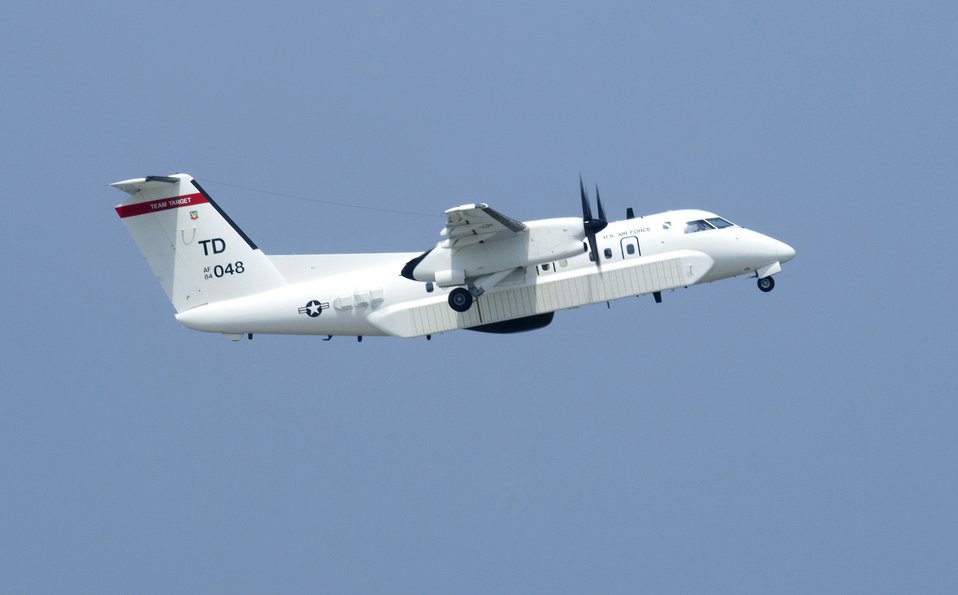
E-9

An E-9A takes off from Tyndall Air Force Base, Fla. during a Combat Archer training exercise. The E-9 is used as a surveillance platform over the Gulf of Mexico waters providing telemetry and radio relays in support of air-to-air weapons systems evaluations.